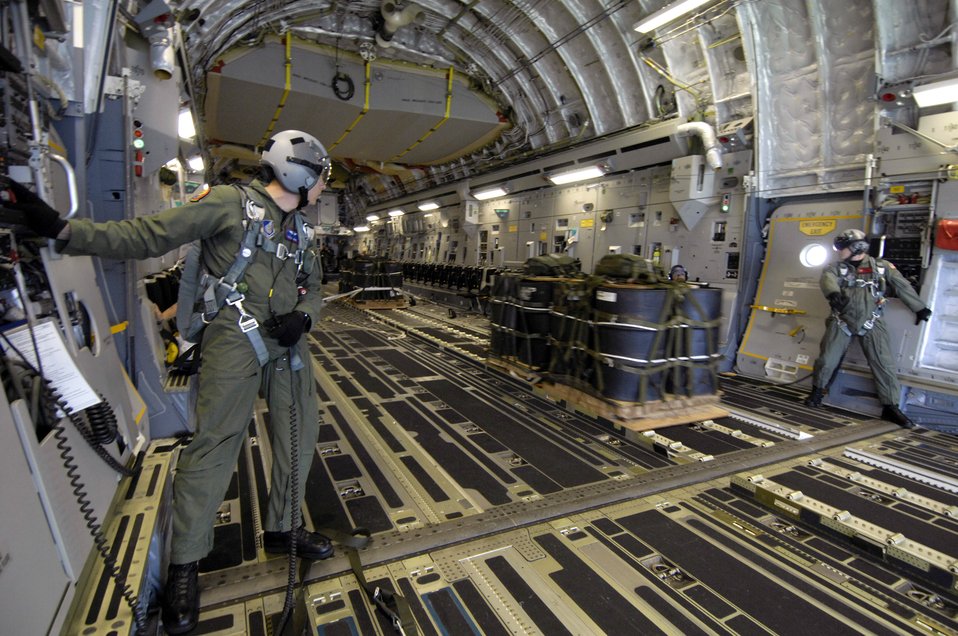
Andersen airdrop

Tech. Sgt. Ken Bragg and Staff Sgt. Allen Culbreth watch as a container delivery system is released from a C-17 Globemaster III during an airdrop mission Dec. 14 over Andersen Air Force Base, Guam. The C-17 from Hickam Air Force Base, Hawaii, is conducting airdrop training at Andersen AFB. The Airmen are loadmasters with the 535th Airlift Squadron.